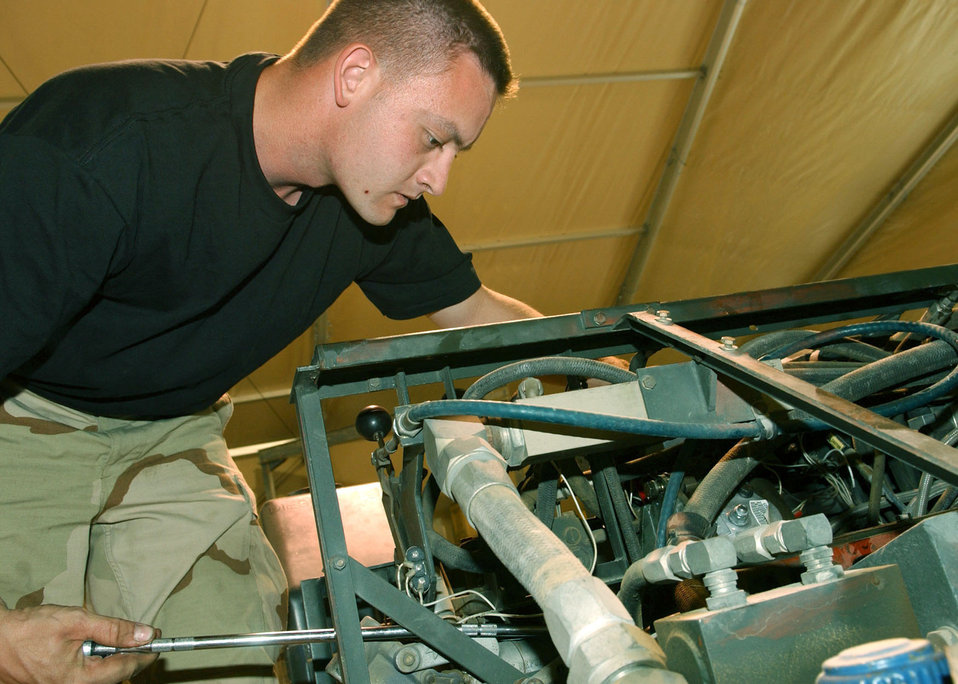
Showing his AGE

BAGRAM AIR BASE, Afghanistan -- Staff Sgt. Curtis Stone replaces a steering mechanism in a weapons jammer used to load bombs and missiles onto A-10 Thunderbolt IIs. Aerospace ground equipment technicians here maintain the equipment used to support the aircraft. Sergeant Stone is assigned to the 81st Expeditionary Aircraft Maintenance Squadron and is from Spangdahlem Air Base, Germany.